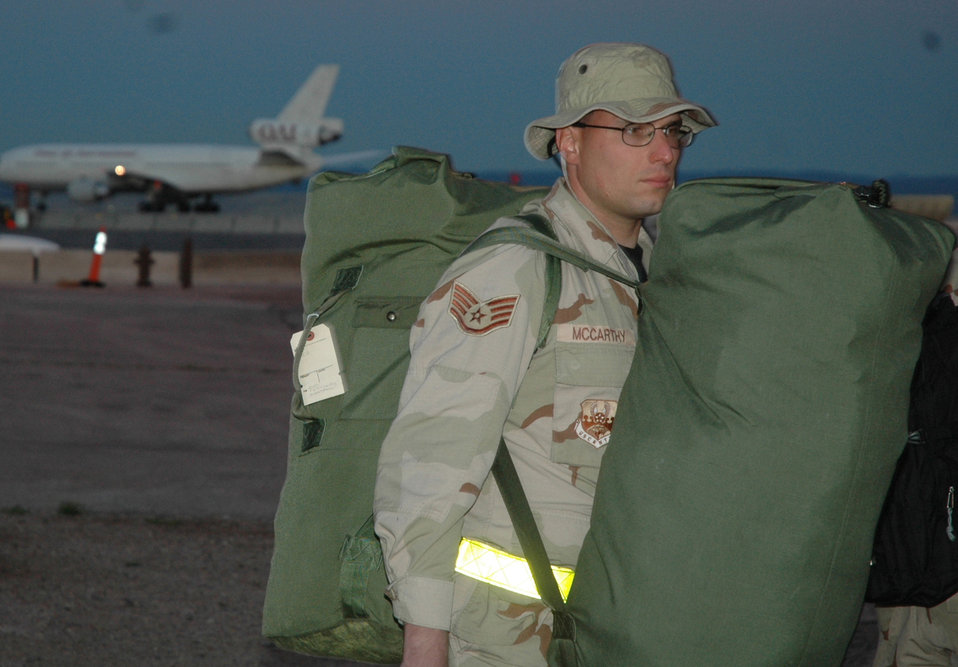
Preparing to deploy

Heavy bags weigh Staff Sgt. Neil McCarthy as he gets ready to deploy from Ellsworth Air Force Base, S.D., in September. The Airman is a member of the 28th Munitions Squadron. More than 500 base Airmen left for duty in Southwest Asia to support operations in Iraq and Afghanistan.